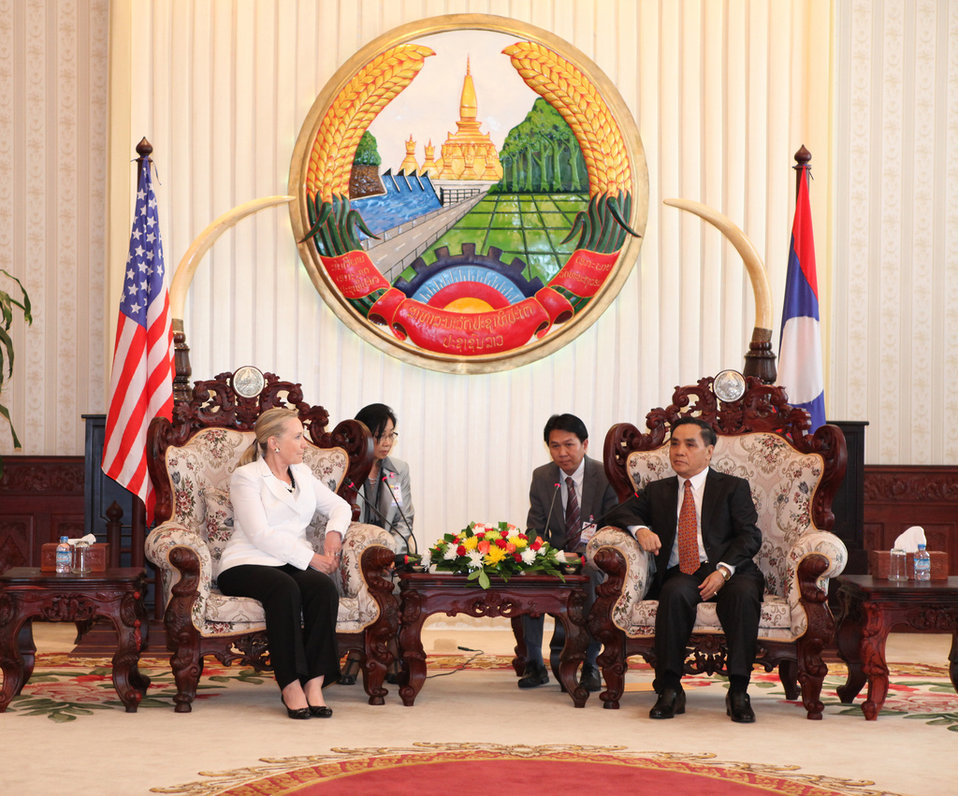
Secretary Clinton Meets With Laotian Prime Minister Thammavong

U.S. Secretary of State Hillary Rodham Clinton and Laotian Prime Minister Thongsing Thammavong sit before a meeting at the Prime Minister's Office in Vientiane, Laos, on July 11, 2012.